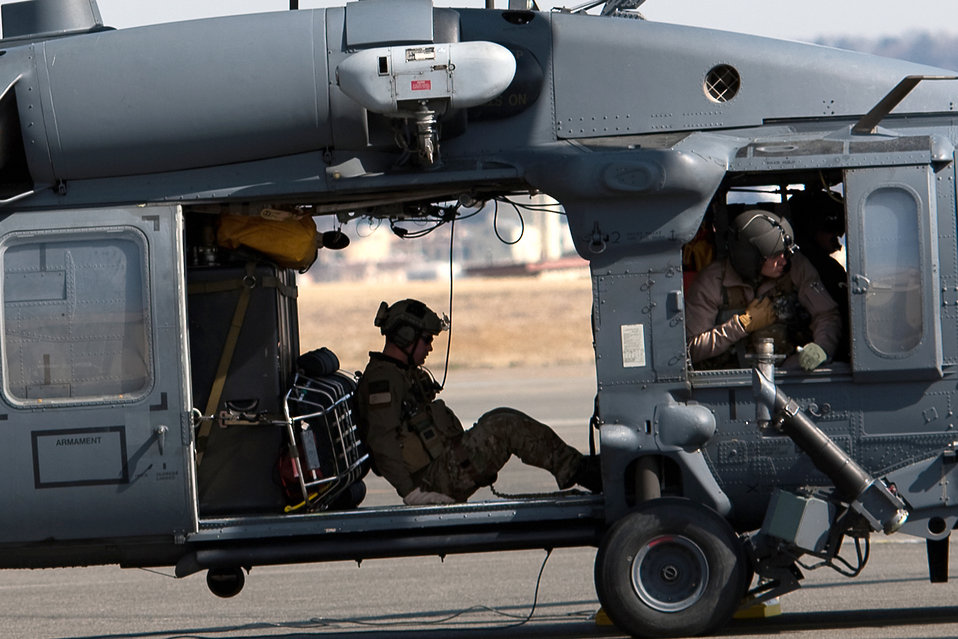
Earthquake and tsunami recovery effort

A joint team of U.S. Air Force and Marine search and rescue members boards a U.S. Air Force HH-60 Pave Hawk helicopter at Yokota Air Base, Japan, to depart on search and rescue missions March 14, 2011. Yokota is receiving personnel, aircraft and supplies to support search and rescue efforts as requested by the government of Japan.